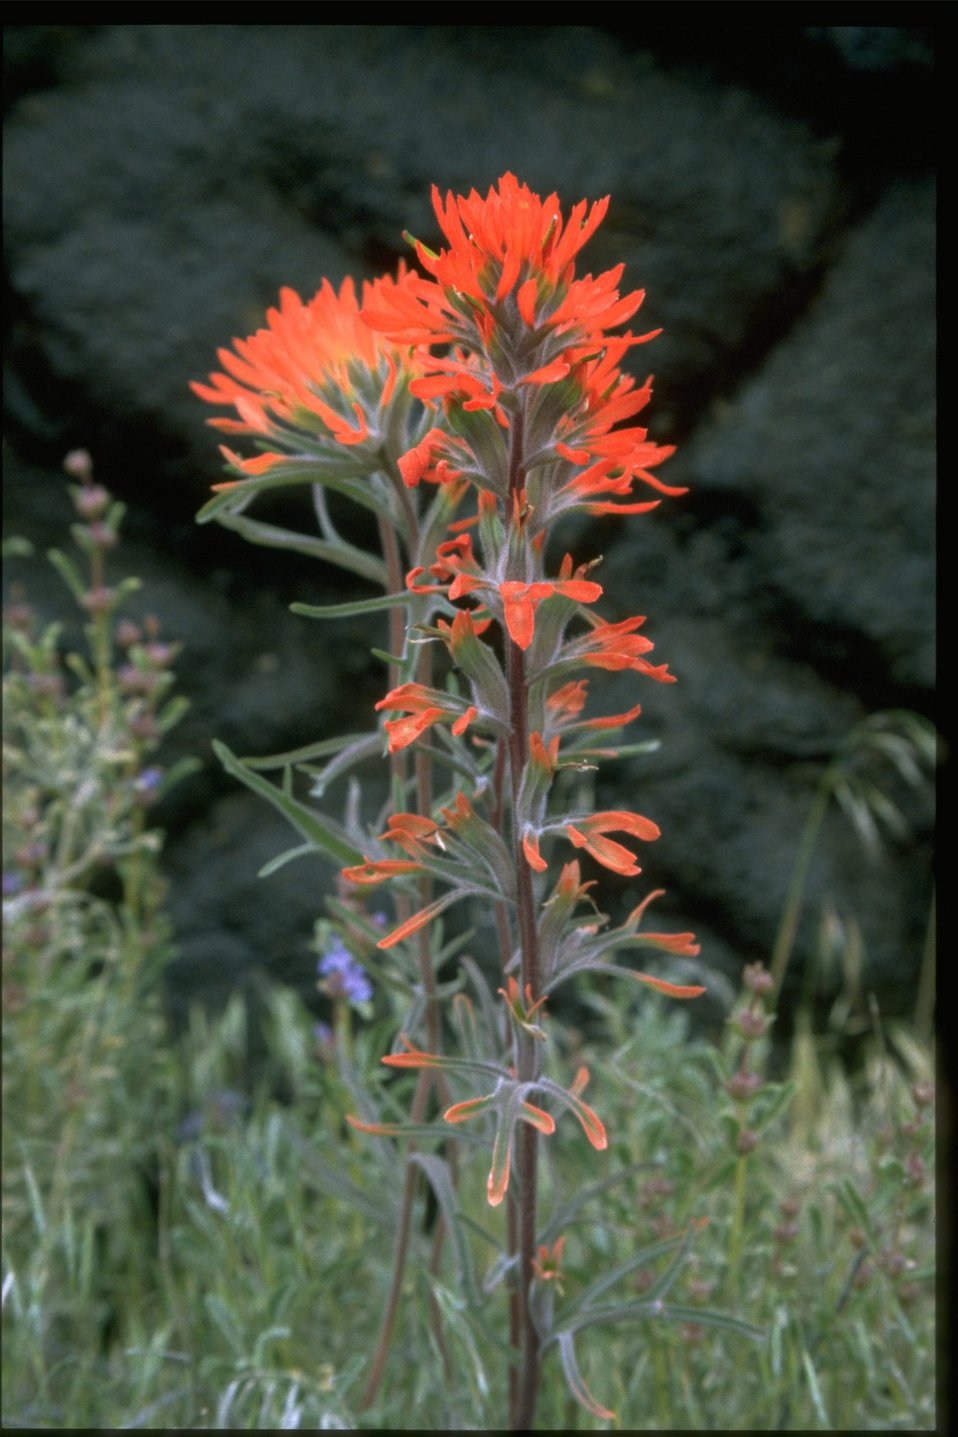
Closeup shot of Indian Paintbrush (Castilleja linariaefolia).